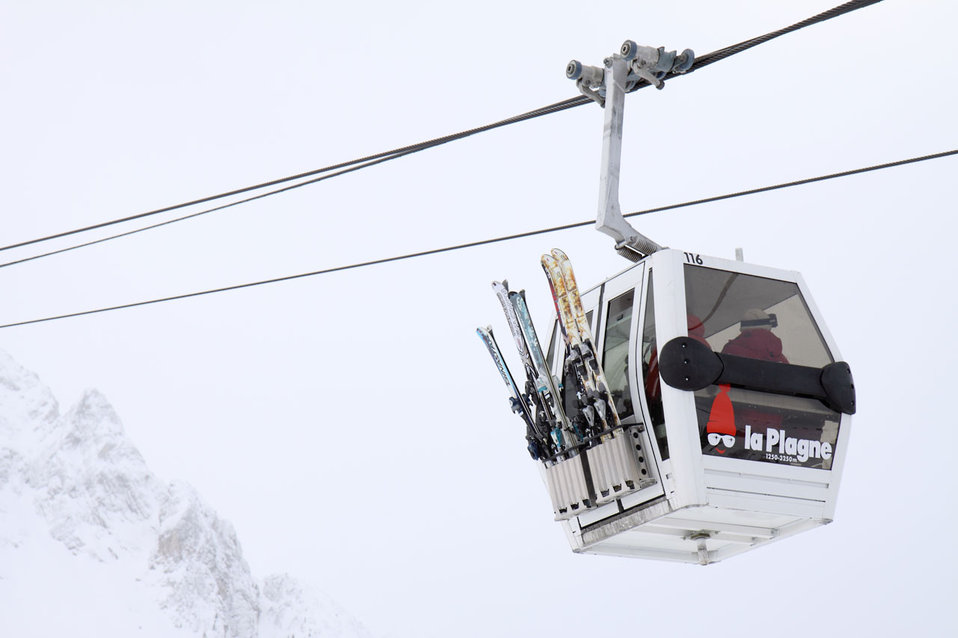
Cable car

Gondola lift with skiers and a mountain.